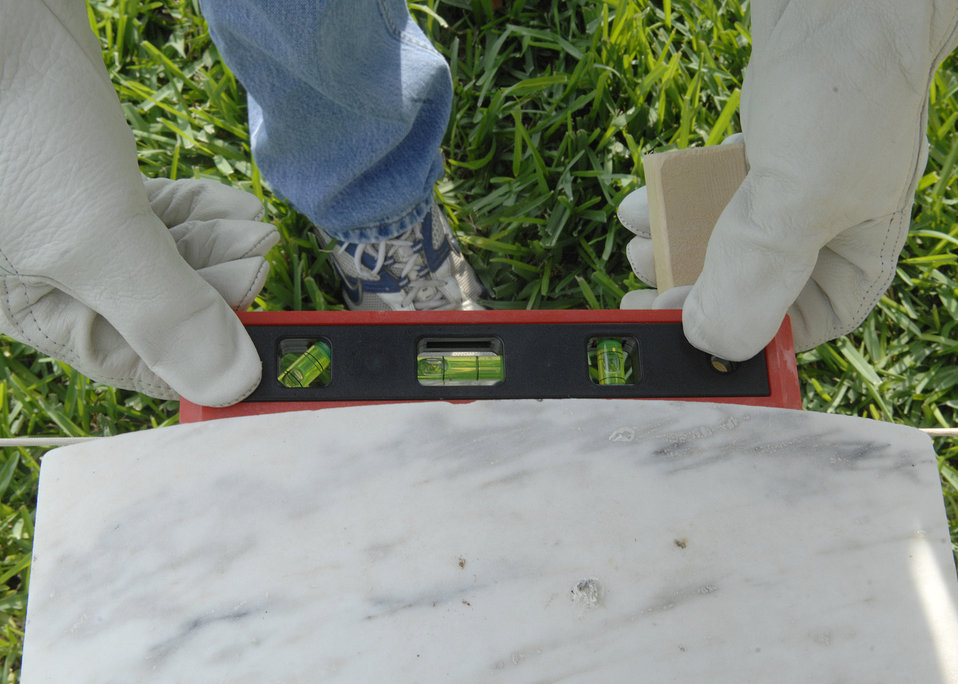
Serving those who served

Airmen volunteers straighten headstones May 15 at the Fort Sam Houston National Cemetery in San Antonio. This process aligns and straightens all the headstones and prepares the cemetery for funerals and the upcoming Memorial Day weekend. Airmen assigned to the Air Force News Agency in San Antonio spent the day adjusting the headstones.